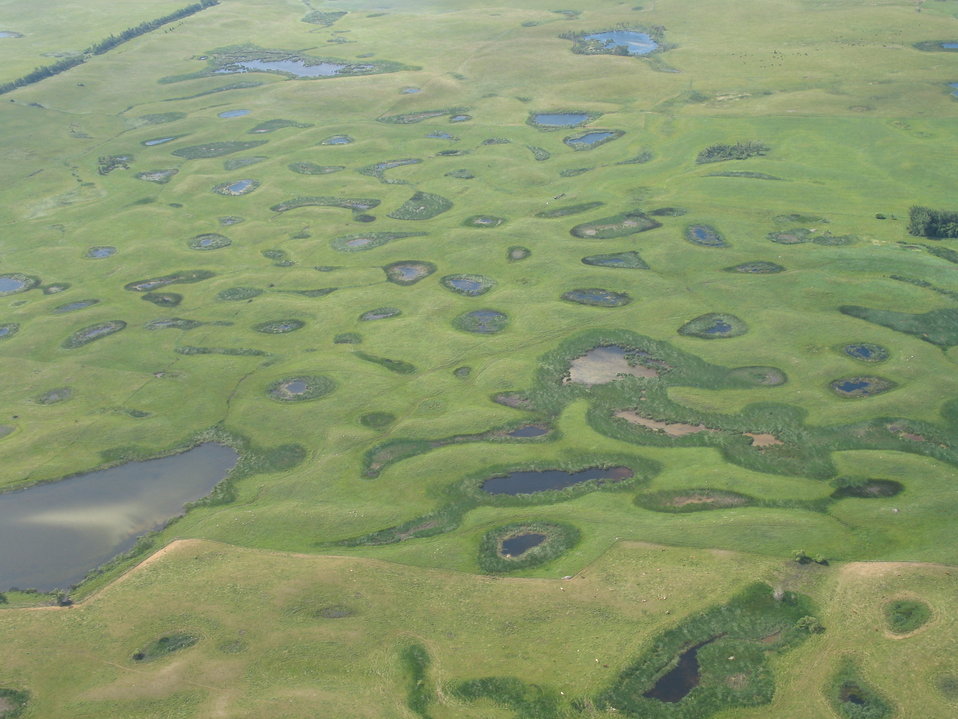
Prairie Potholes

A mix of wetlands and grasslands in northeast South Dakota is a magnet for breeding ducks.